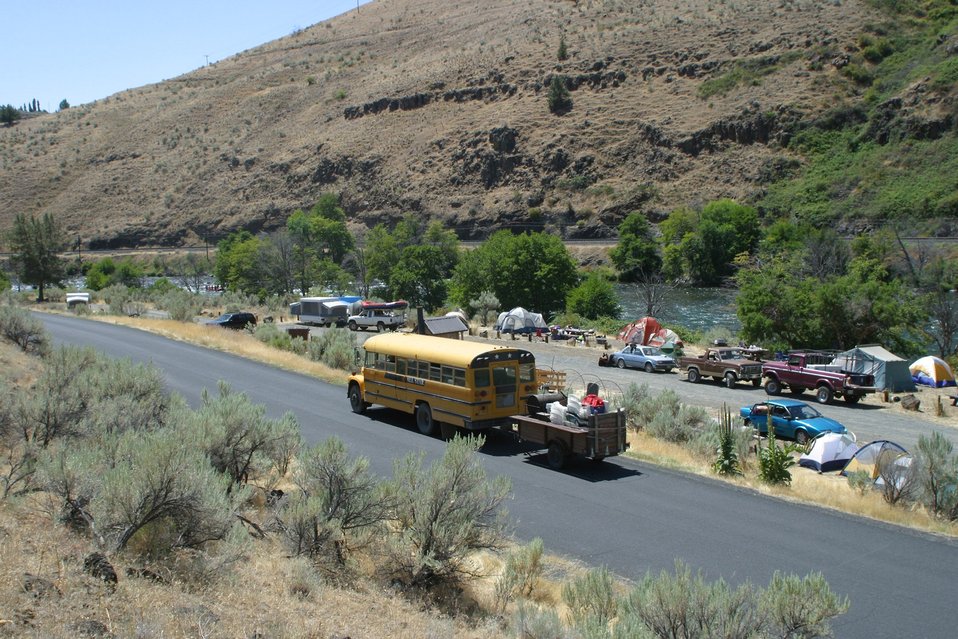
Oasis Campground along the Lower Deschutes River.